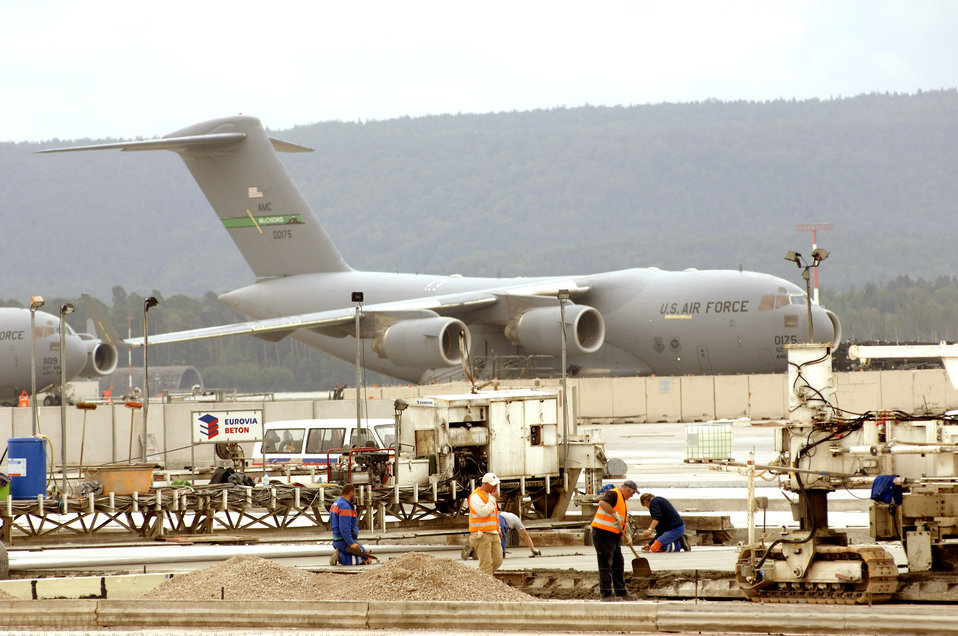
Rhein-Main transition on track

RAMSTEIN AIR BASE, Germany -- Two C-17 Globemaster IIIs from McChord Air Force Base, Wash., sit on the base's old ramp while construction crews build a new section to the ramp. The new construction, part of the Rhein-Main Transition Program, will bring Ramstein 65 percent of the airlift traffic once bound for Rhein-Main Air Base.